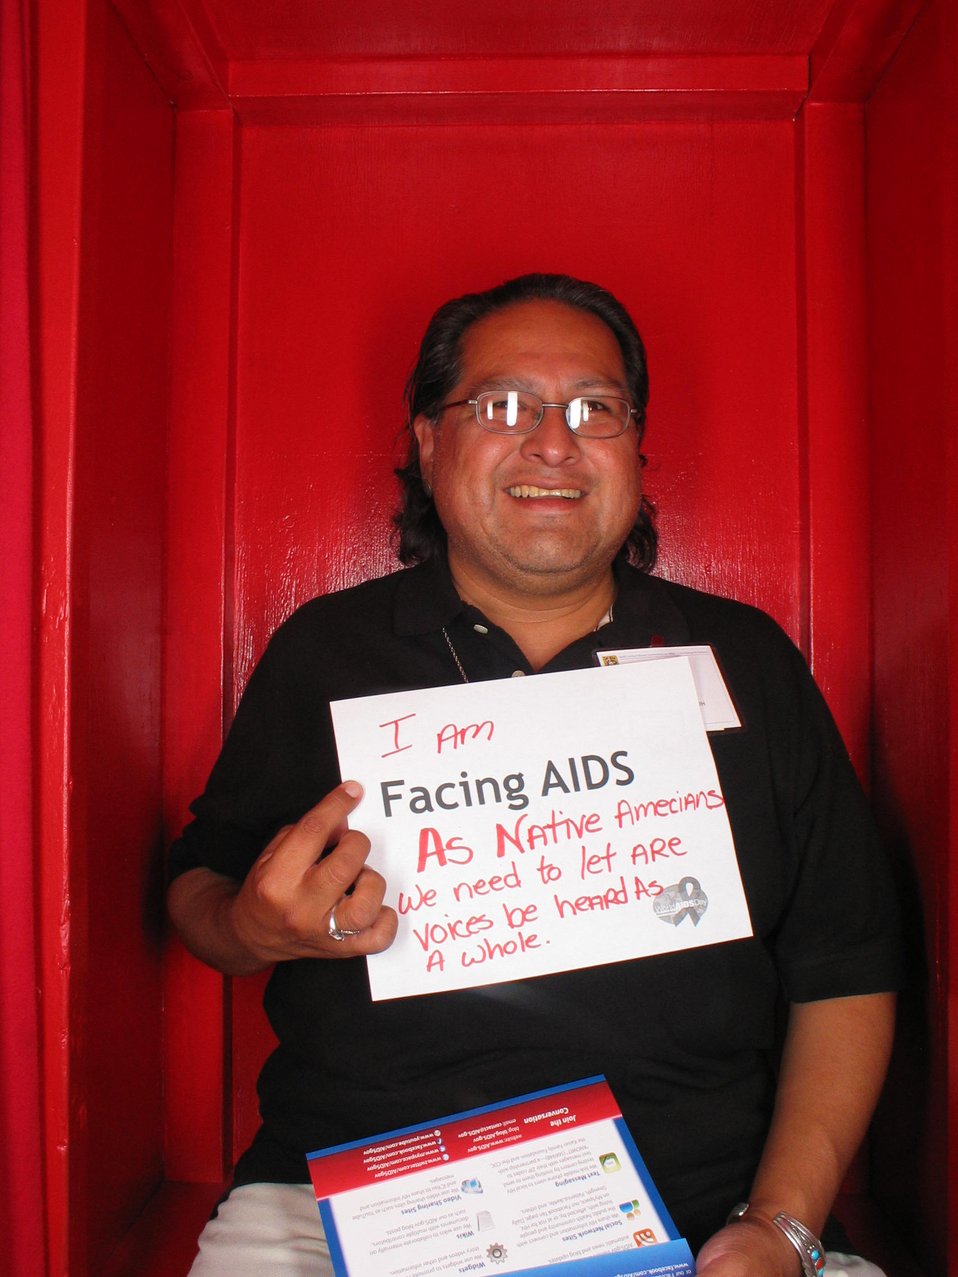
I am Facing AIDS as Native Americans we nee to let are voice be heard as a whole.